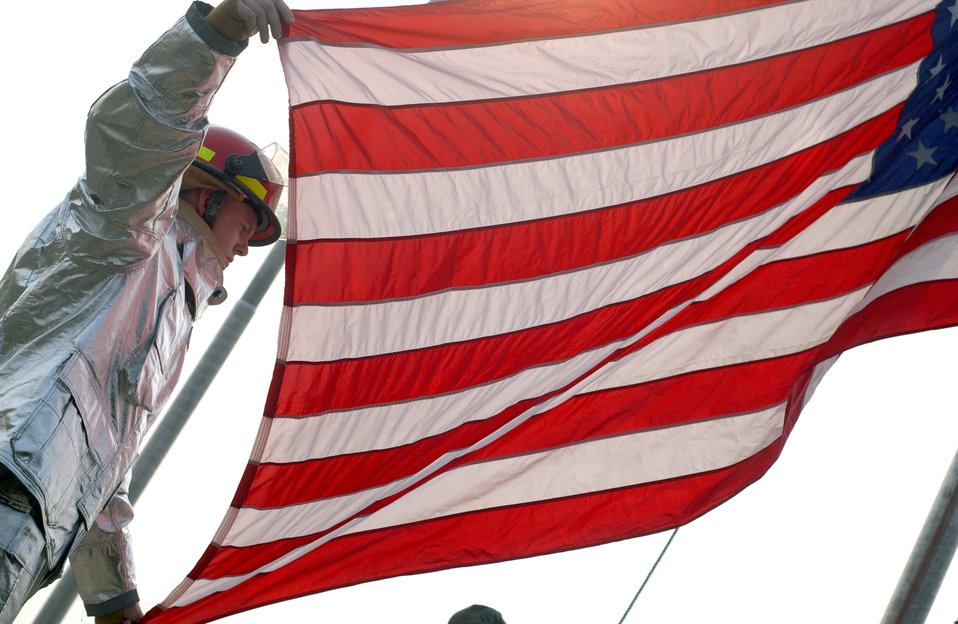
Kunsan Airmen remember Sept. 11

Tech. Sgt. Jason Rosenbaum helps raise the flag during the Sept. 11, 2001, remembrance ceremony Sept. 11 at Kunsan Air Base, South Korea. Sergeant Rosenbaum was the project coordinator for the ceremony marking the sixth anniversary of the terrorist attacks in New York City, the Pentagon and Shanksville, Pa. Sergeant Rosenbaum is a firefighter with the 8th Civil Engineer Squadron.